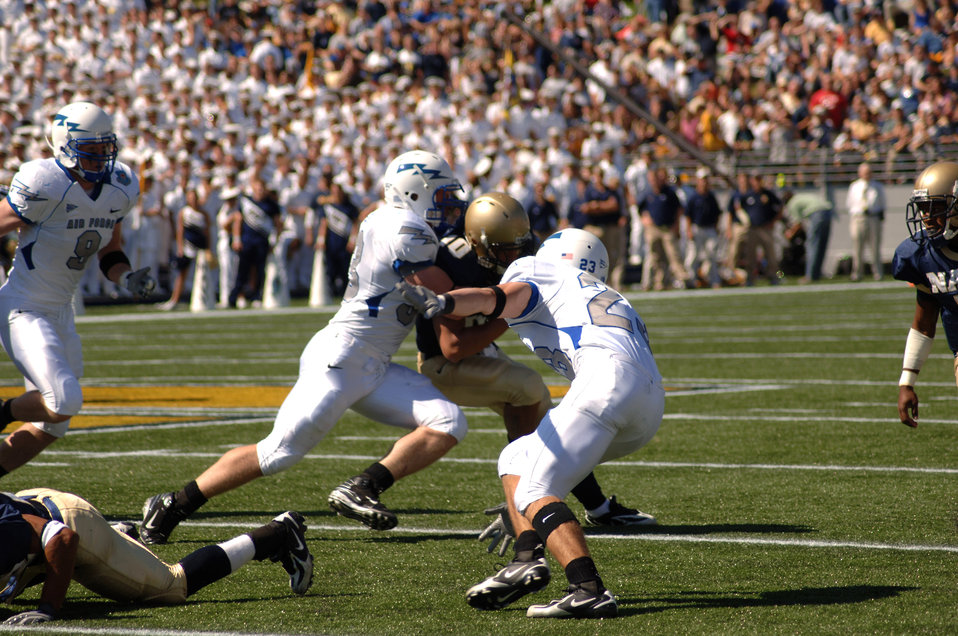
Football: Falcons fall to Navy, 31-20

U.S. Air Force Academy Falcon linebacker Drew Fowler wraps up Navy quarterback Kaipo-Noa Kaheaku-Enhada as free safety Aaron Kirchoff closes in during Air Force's 31-20 loss Sept. 29 at Annapolis, Md. Fowler had 16 tackles in the game and Kirchoff had four.